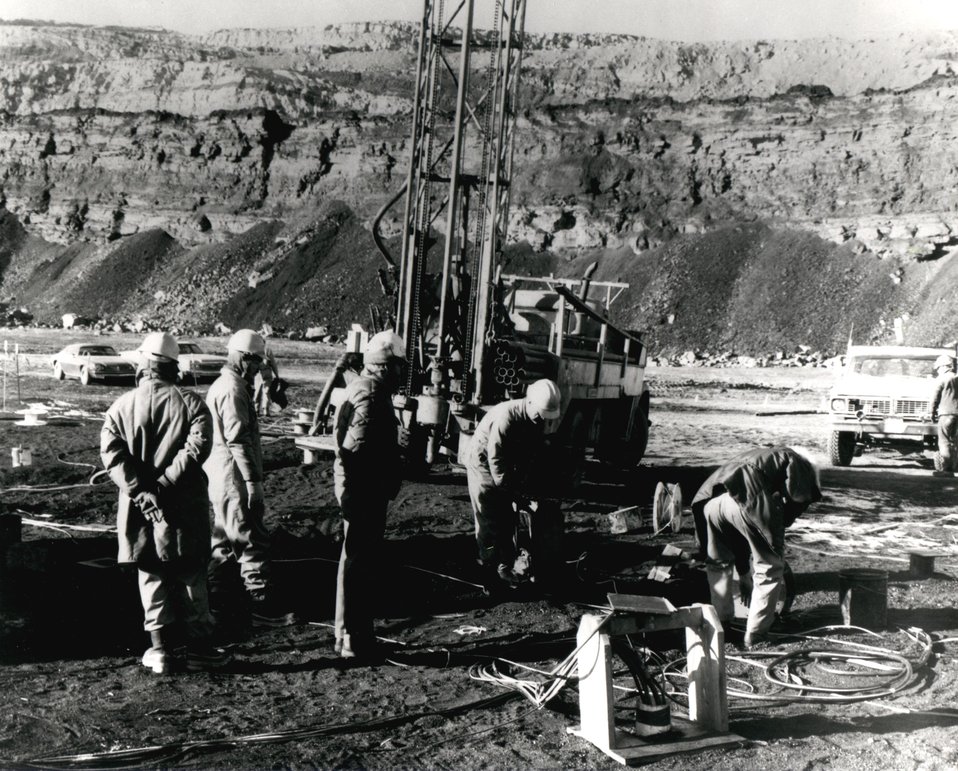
A field crew sets accelerometers in a hole drilled into a coal deposit for an experiment in the fracturing of the coal with high explosives. The Kemmerer Coal Company Mine in Kemmerer, Wyoming. Circa 1975.